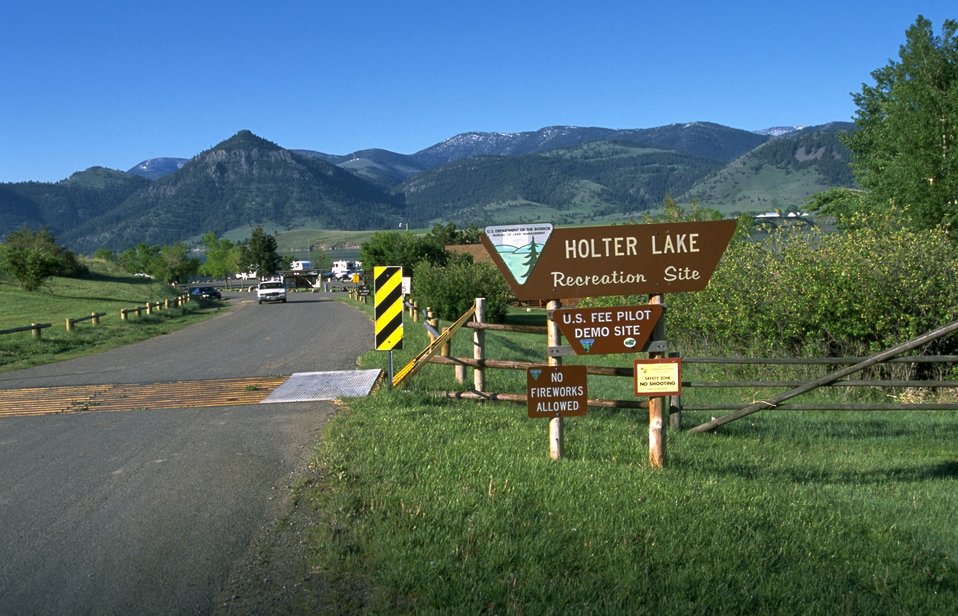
Entrance and regulation signs at Holter Lake Recreation Site